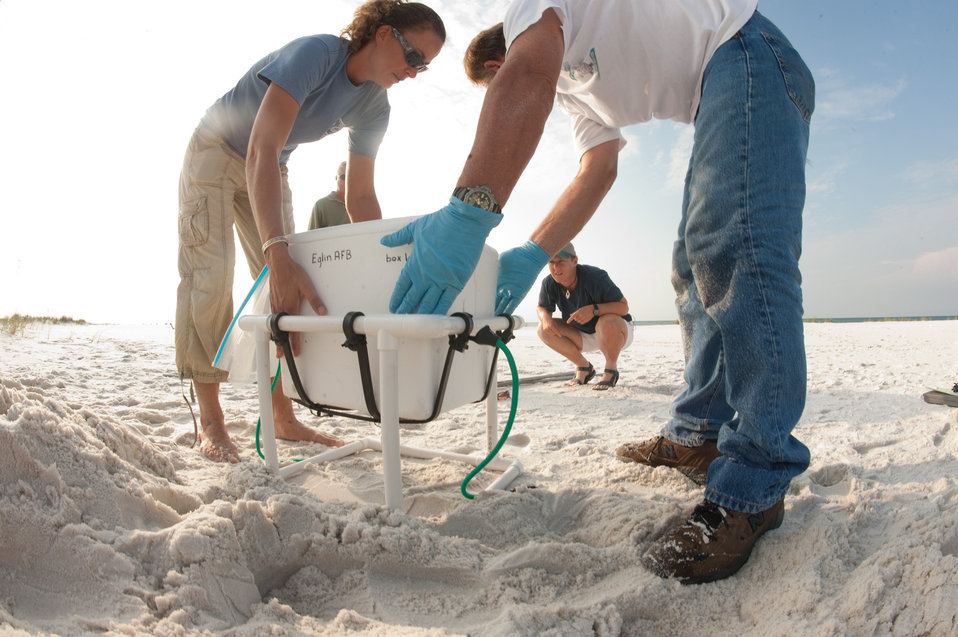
Turtle Eggs avoid Gulf Oil Danger

Kathy Gault (background) calls out adjustments to Bob Miller (right) and Kelley Anderson-Nunley (left) who make slight adjustments to level a Styrofoam cooler containing half of a 112-Loggerhead sea turtle egg nest at Eglin Air Force Base, Florida, on August 9, 2010. Mr. Miller and Ms. Gault are endangered species biologist with the 96th Civil Engineer Squadron and Ms. Anderson-Nunley is a contract wildlife technician with Colorado State University. The cooler is sitting resting on elastic bands of a shipping frame. Because of the critical attachment of the embryo to the inside of the eggshell, the eggs must be gently moved. With equal care the transportation to the Atlantic coast is critical and gentle. At a controlled climate facility, they will be allowed to hatch in the cooler. Wildlife technicians will then release them into the ocean.